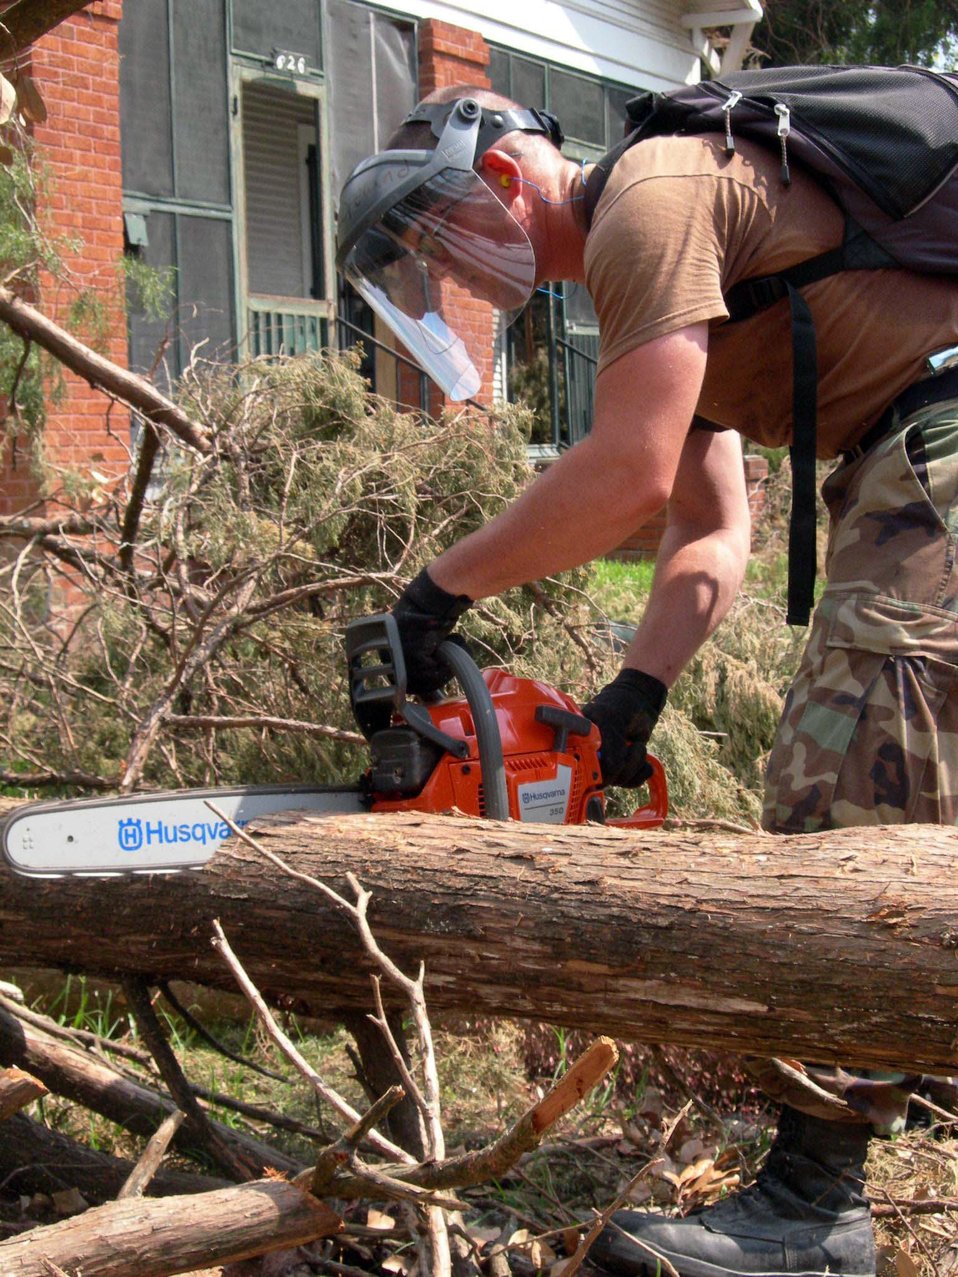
New Orleans cleanup

NEW ORLEANS - Staff Sgt. Joshua Copeland cuts through a downed tree in a neighborhood here Sept. 13. About 100 Airmen from the 4th Expeditionary Civil Engineer Squadron helped clear debris alongside members of the 82nd Airborne Division. Sergeant Copeland is deployed from the 375th CES at Scott Air Force Base, Ill.